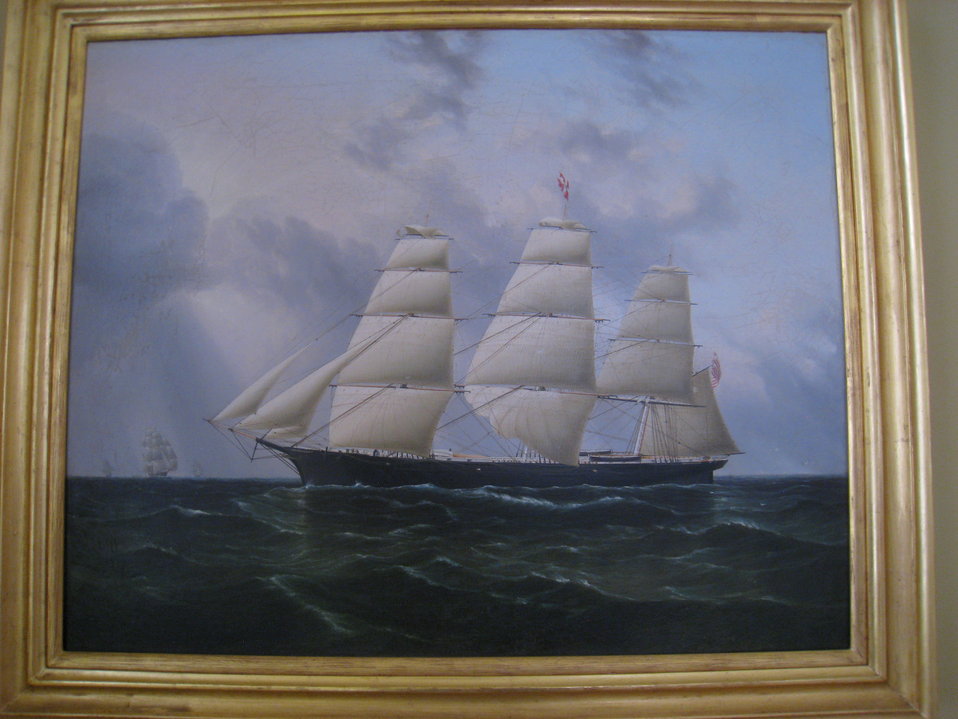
'Sovereign of the Seas', attributed to James Butterworth, c. 1852 - Old State House Museum, Boston, Massachusetts, USA.